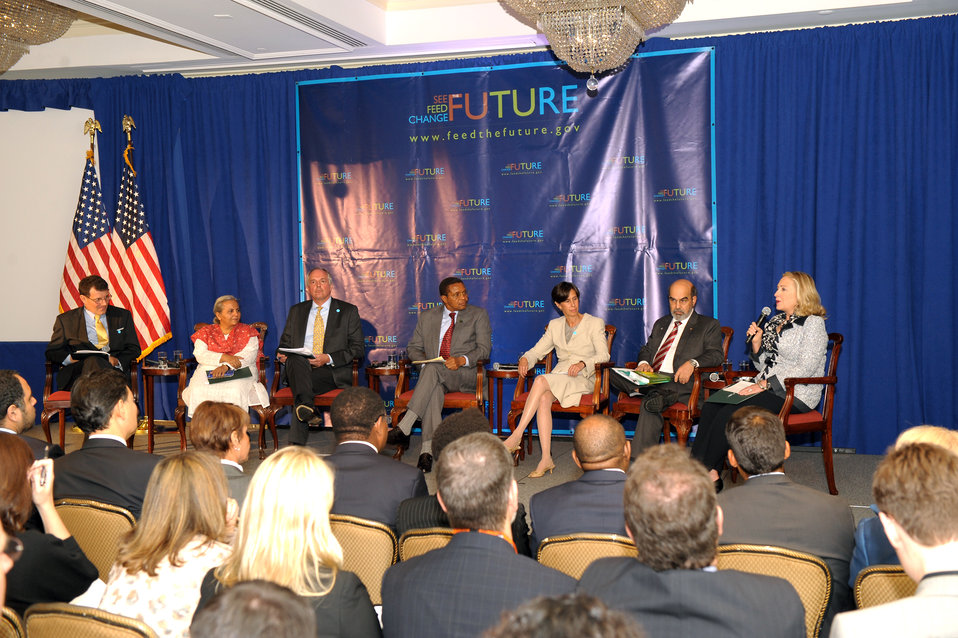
Secretary Clinton Hosts a Panel Discussion on “Women and Agriculture: A Conversation on Improving Global Food Security”

U.S. Secretary of State Hillary Rodham Clinton hosts a panel discussion, “Women and Agriculture: A Conversation on Improving Global Food Security,” moderated by Nick Kristof of The New York Times, at the Intercontinental Hotel in New York, New York, on September 19, 2011.